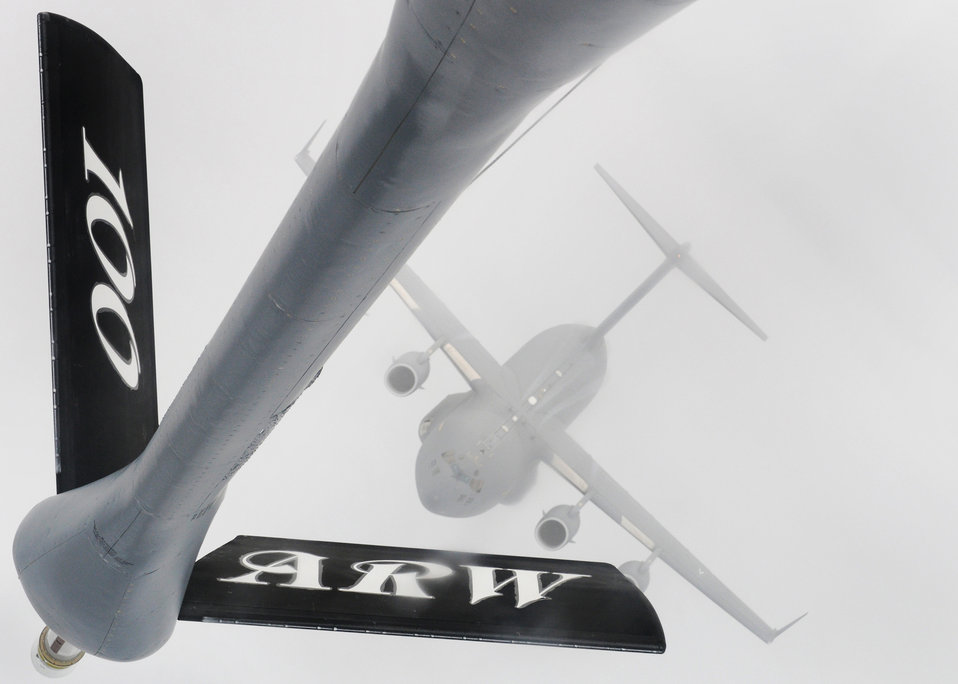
Ghostly fueling

A C-17 Globemaster III approaches a KC-135 Stratotanker boom over Germany Nov. 12, 2010, during a training mission. The C-17 is with the Heavy Airlift Wing at Papa Air Base, Hungary, and the KC-135 is from the 100th Air Refueling Wing at Royal Air Force Mildenhall, England.